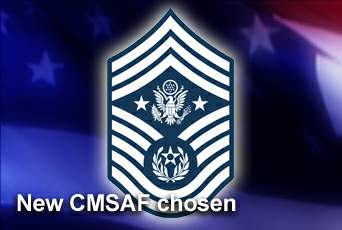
New chief master sgt. of the Air Force named

Chief Master Sgt. James A. Roy has been selected to replace Chief Master Sgt. of the Air Force Rodney J. McKinley, who will be retiring at the end of June. Chief Roy currently is the senior enlisted advisor to the U.S. Pacific Command combatant commander.